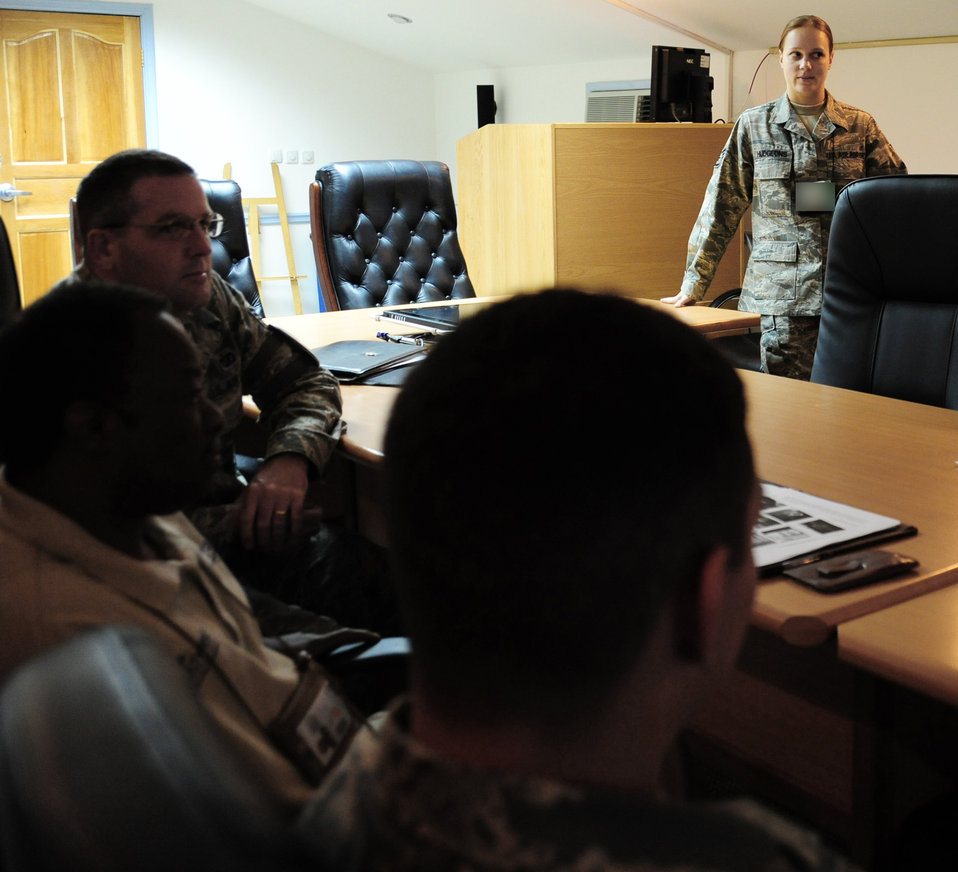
Airmen aid coalition with multilanguage skills

Staff Sgt. Maria Hudgeons teaches a Russian language class at the 376th Air Expeditionary Wing conference room July 15 at the Transit Center at Manas Air Base, Kyrgyzstan. Sergeant Hudgeons is a coalition coordinator and linguist assigned to the 376th Air Expeditionary Wing. She is deployed from the 2nd Comptroller Squadron at Barksdale AFB, La.